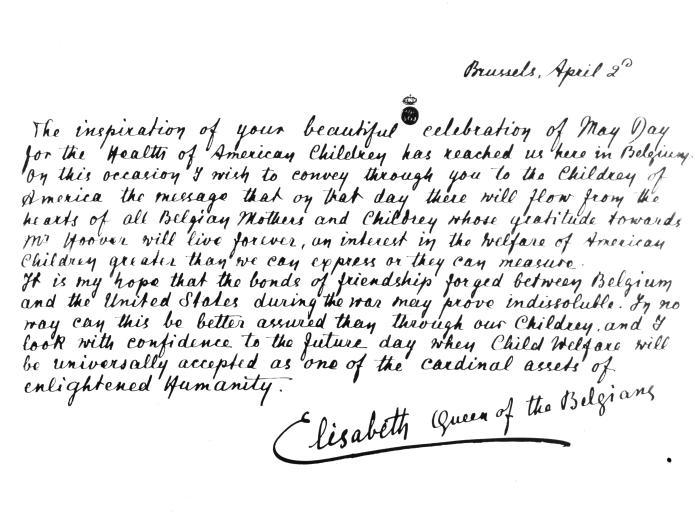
This historic image depicted what was a letter from the Queen of Belgium, on the occasion of the observance of 'Child Health Day'. The original image was scanned from a glass lantern slide donated by the Minnesota Department of Health, and is one of a historical collection of documents and photographs devoted to observances of Child Health Day in the United States.